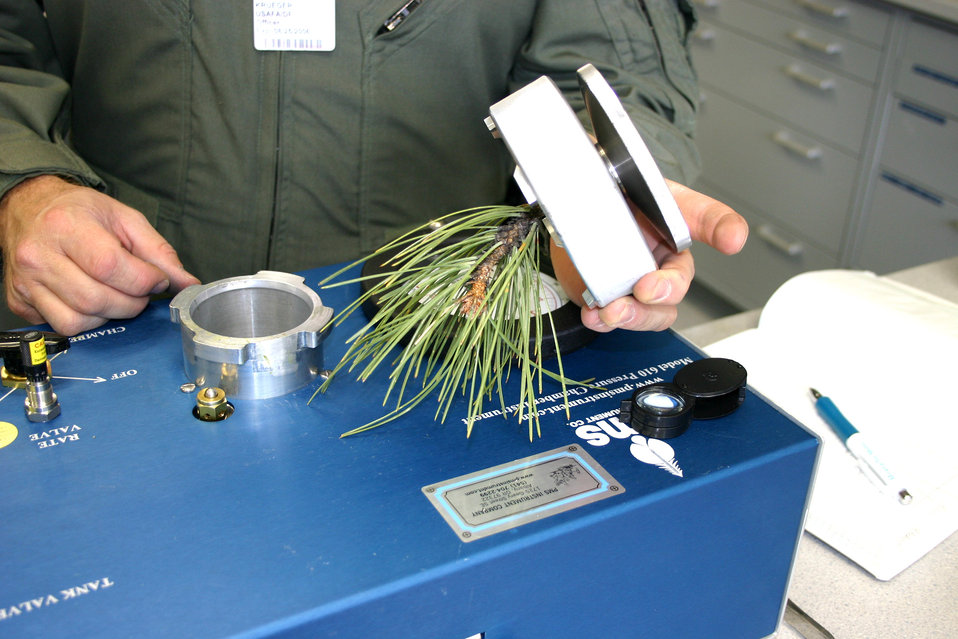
UAVs hunt tree disease

U.S. AIR FORCE ACADEMY, Colo. (AFPN) -- Maj. Jerry Krueger uses the plant pressure chamber to asses the hydration level of pine needles. The research is part of the field ecology class here.